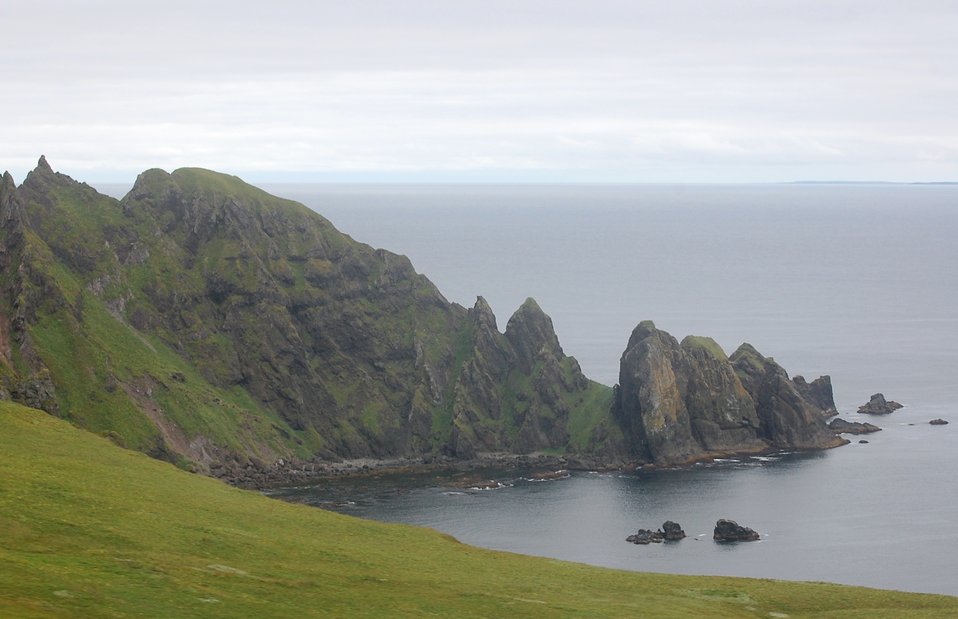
Ikatan Peninsula

Unimak Island, Alaska Maritime National Wildlife Refuge